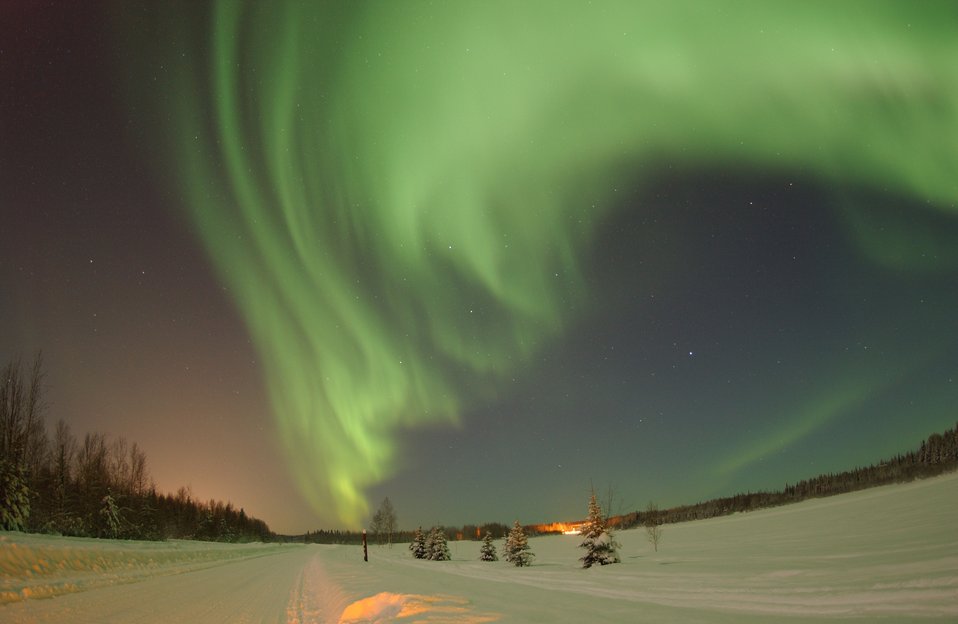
Northern Lights

EIELSON AIR FORCE BASE, Alaska - The Aurora Borealis, or Northern Lights, shines above Bear Lake here Jan. 18.